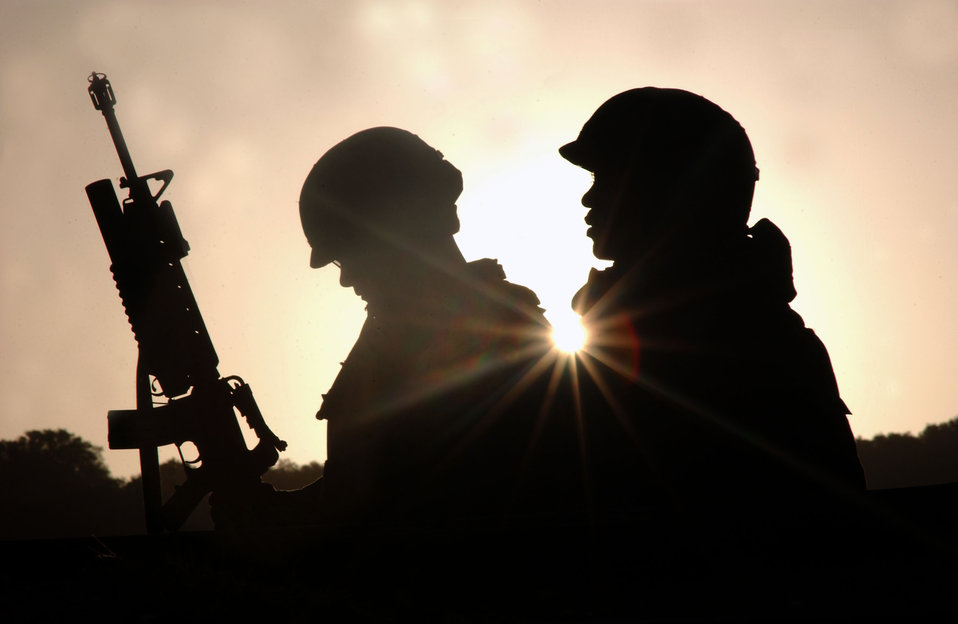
By dawn's early light

VANDENBERG AIR FORCE BASE, Calif. -- Staff Sgt. Scott Suzadail (left), and Senior Airman Alyncia Clay of the 30th Security Forces squadron establish a defensive fighting position April 23, 2003 during North Star '03. North star '03 is a field training exercise helping the members of the 30th Space Wing prepare for real-world deployments.